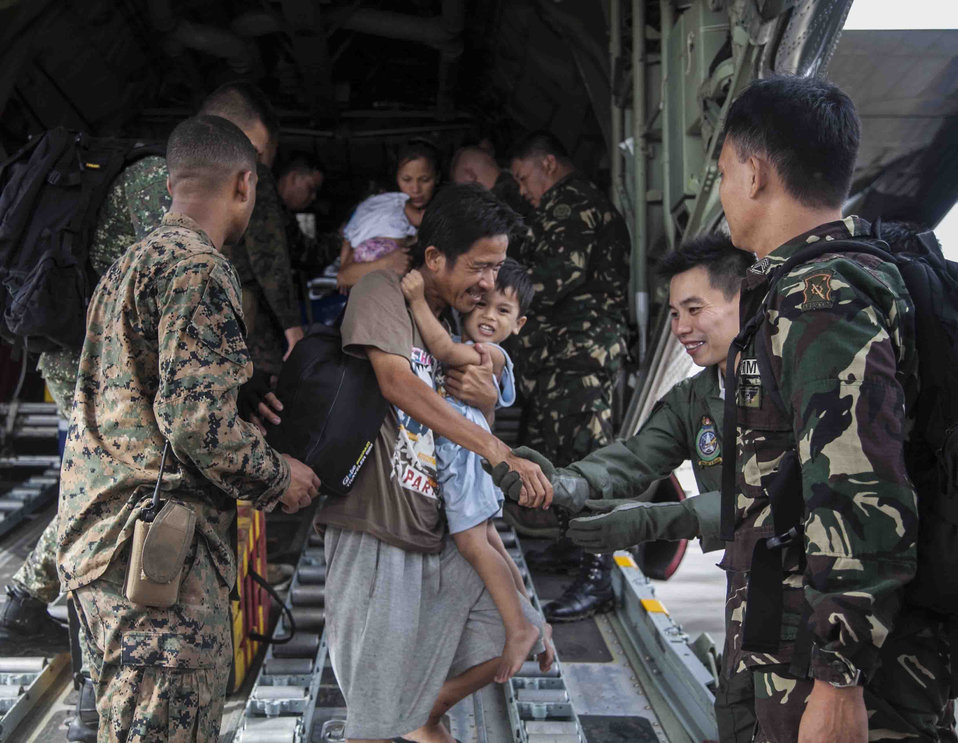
U.S. Marine Corps Cpl. Cannon and Members of the Philippine Armed Forces Help People Displaced by Typhoon Haiyan

U.S. Marine Corps Lance Cpl. Xavier L. Cannon, left, and members of the Philippine Armed Forces help people displaced by Typhoon Haiyan as part of Operation Damayan at Villamor Air Base in the Philippines on November 13, 2013. U.S. forces were deployed to the Philippines to support humanitarian efforts in response to Typhoon Haiyan.